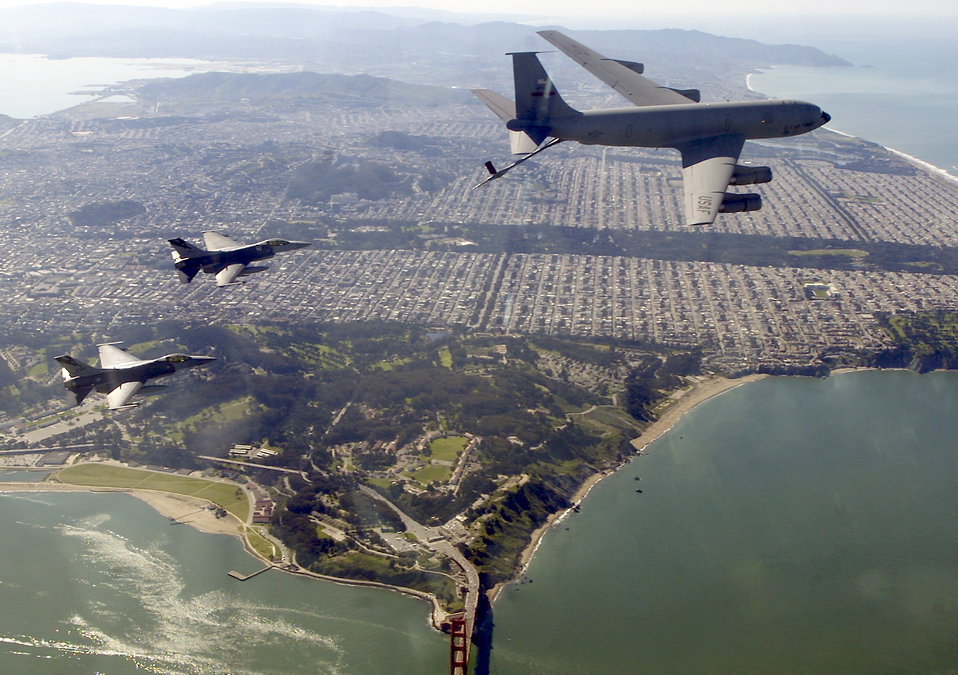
Noble Eagle

OVER THE SAN FRANCISCO BAY -- Two F-16 Fighting Falcons move into a precontact position with a KC-135E Stratotanker before refueling during an Operation Noble Eagle training patrol March 16. The F-16s are assigned to the California Air National Guard's 144th Fighter Wing in Fresno and the KC-135E is assigned to the 940th Aerial Refueling Wing at Beale Air Force Base, Calif.